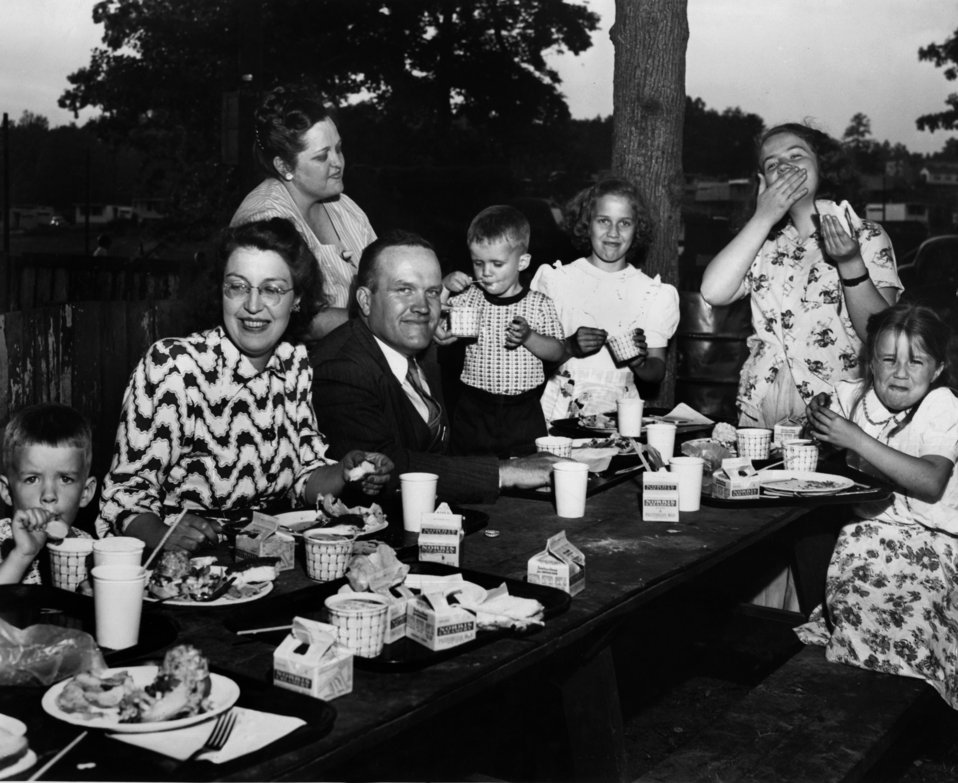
Blankenship Family Enjoying a Picnic in Oak Ridge

2958 DOE photo Ed Westcott 1940s L to R Johnnie Blankenship, Mrs. Blankenship, Miss. Ruth Reagan, Dr. A.H. Blankenship, Tommy Blankenship, Kay Blankenship, Jean Blankenship, and Sue Blankenship. Dr. Blankenship established the Oak Ridge School system in 1943 and was the first Superintendent of Oak Ridge Schools. The high school football field was named after him 'Blankenship Field.'